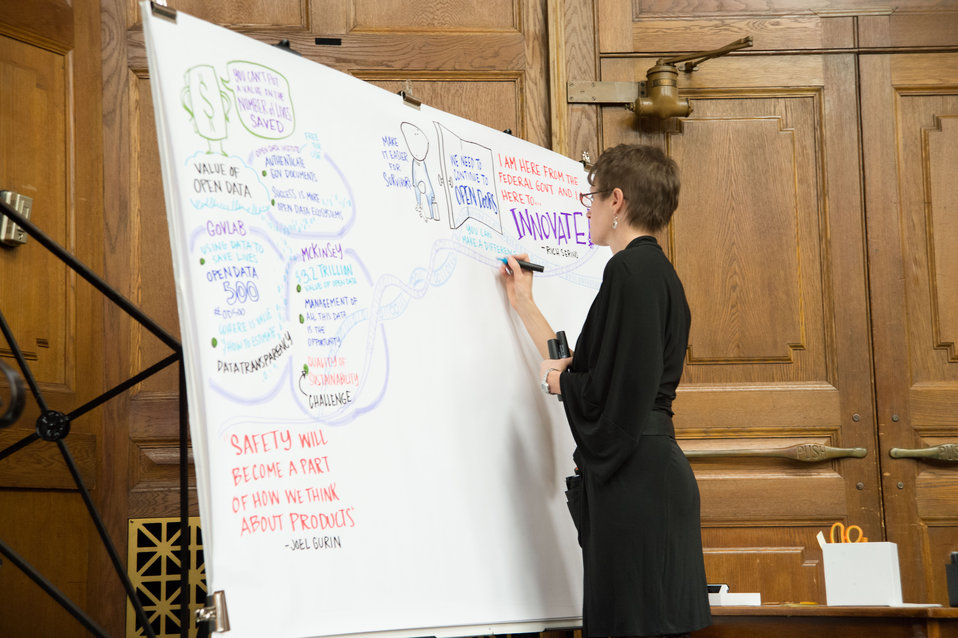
The White House Office of Science and Technology Policy, the White House Office of Public Engagement, the U.S. Department of Transportation, and the U.S. Department of Agriculture (USDA) host the second annual “Safety Datapalooza,” in the Jefferson Auditorium at USDA in Washington, D.C. on Tuesday, Jan. 14, 2014. The “Safety Datapalooza,” highlights innovators from the private, nonprofit, and academic sectors who have used freely available government data to build products, services, and apps that advance public safety in creative and powerful ways. This year’s meeting features new safety data resources in the areas of transportation, food, occupational and consumer product safety tools to improve disaster preparedness and emergency response. A series of panel discussions and brainstorming sessions are being held in which attendees will have the opportunity to discuss how technology and open data are being used to address public safety challenges across America.